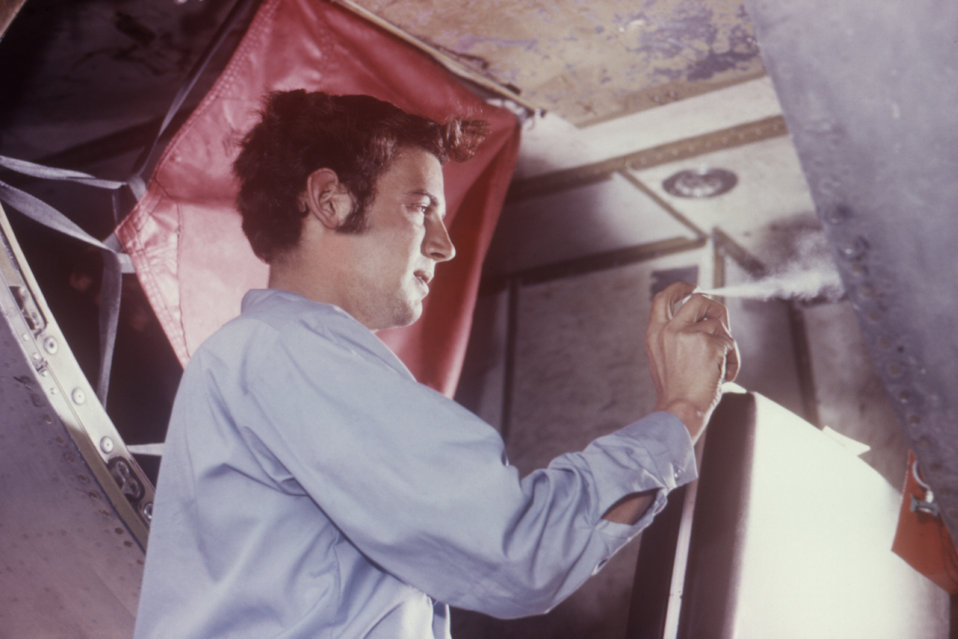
This 1971 photograph shows an airline ground crewman spraying an aircraft's cargo compartment with an aerosol pesticide spray.